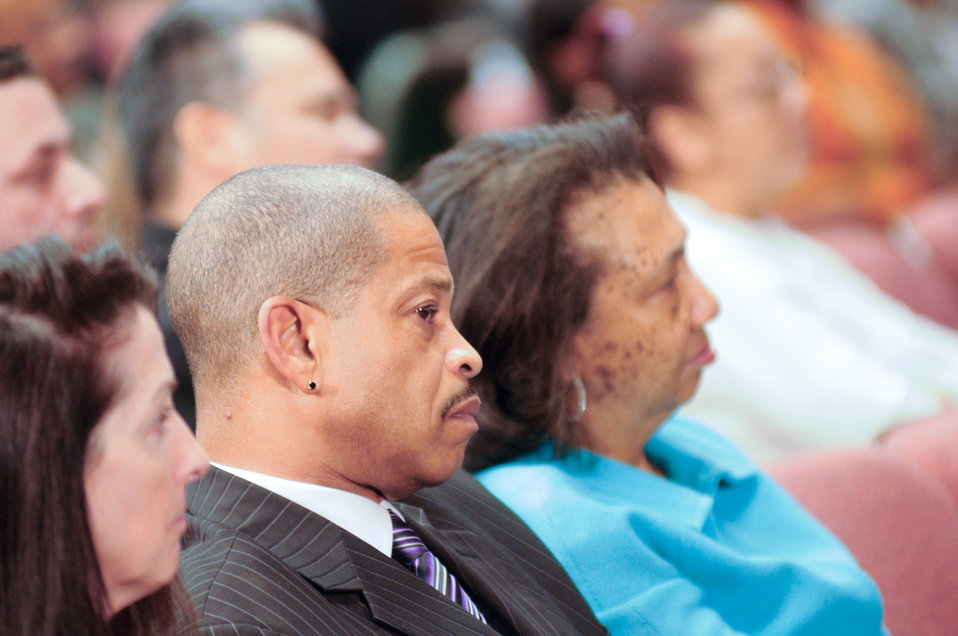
The audience listens to U.S. Department of Agriculture (USDA) as Chief of Human Capital Officer William P Milton, Jr., profides closing remarks for the USDA Dr. Martin Luther King, Jr. National Service Day and Drum Major for Service Awards at the USDA Jefferson Auditorium on Tuesday, Jan. 15, 2013.